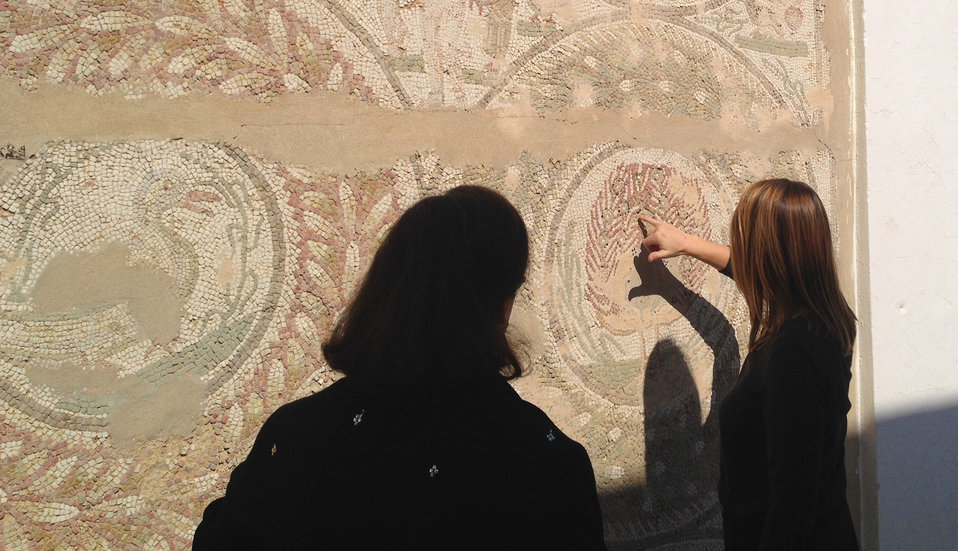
Deputy Secretary Higginbottom Examines a Mosaic at the Archaeological Site of Carthage

Deputy Secretary of State for Management and Resources Heather Higginbottom examines a mosaic during her visit to the Archaeological Site of Carthage, a UNESCO World Heritage Site, in Tunisia, on March 18, 2014.